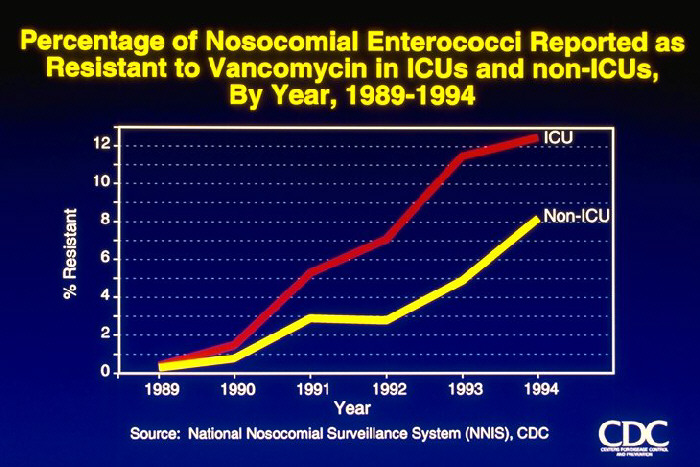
Percentage of Nosocomial Enterococci Reported as Resistant to Vancomycin in Intensive Care Units and non-ICUs, 1989-1994 (graph)